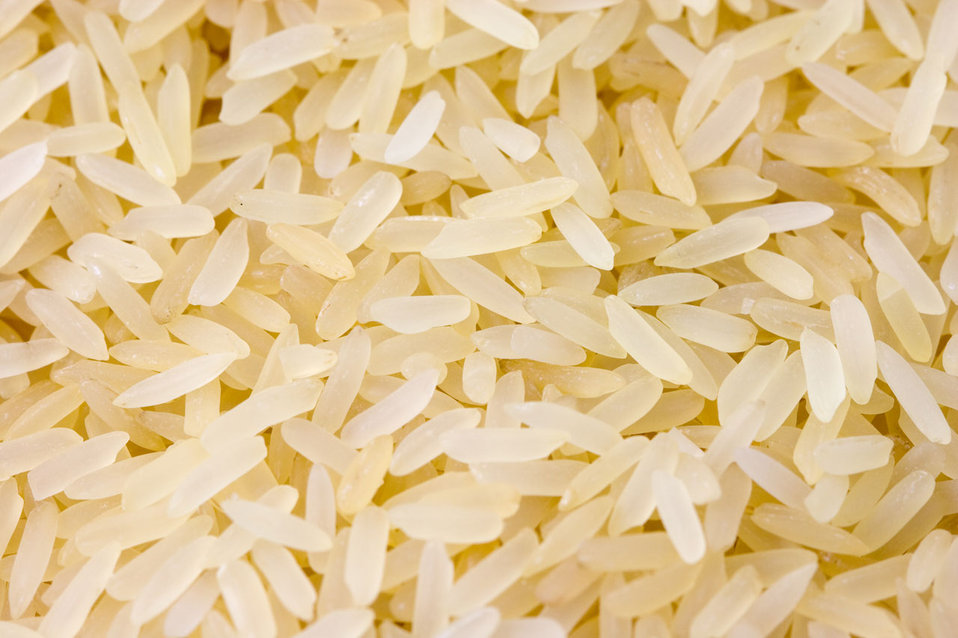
Rice

Plenty of rice.